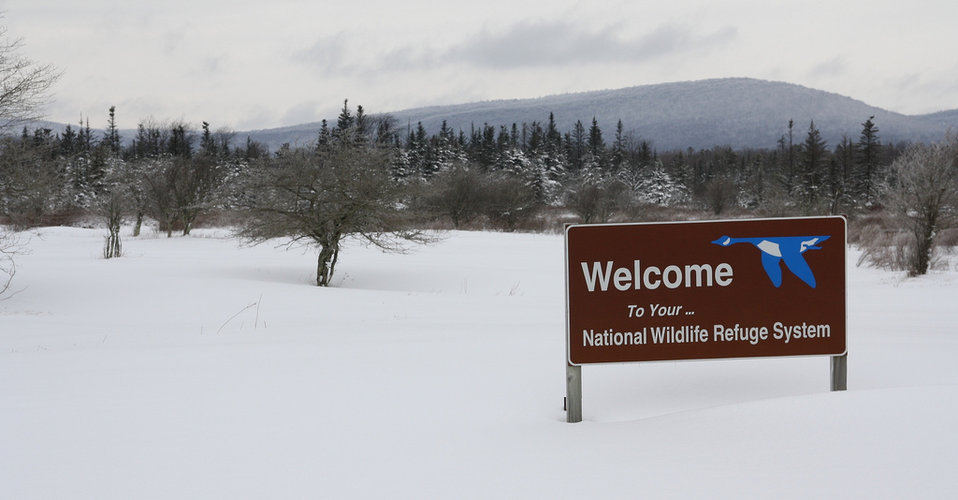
Refuge Winter Welcome

Canaan Valley National Wildlife Refuge welcomes visitors during all seasons.